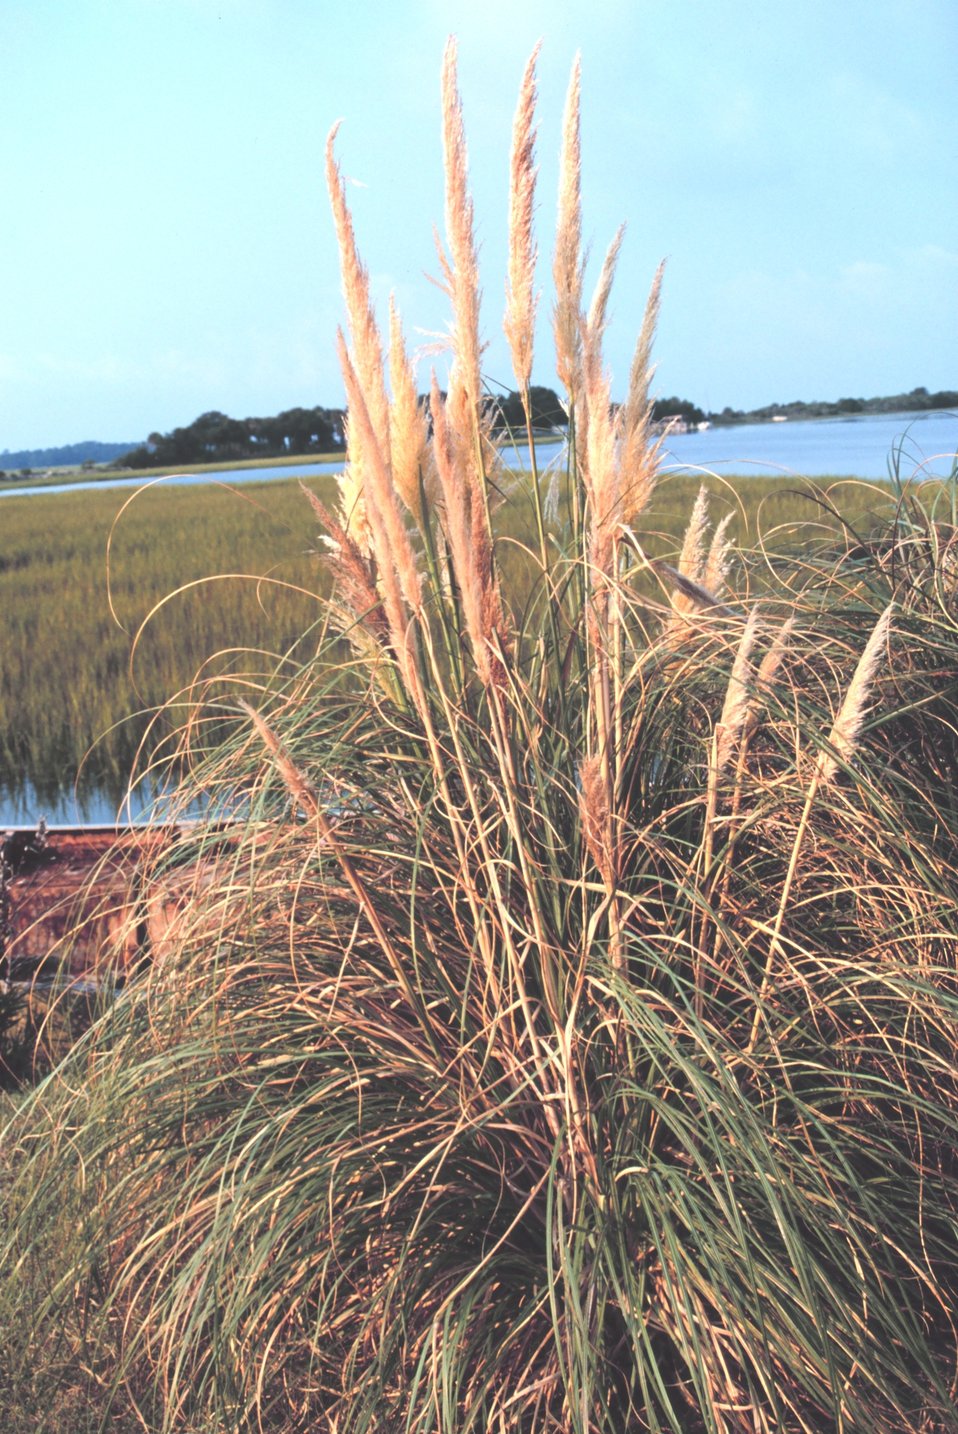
A large phragmites plant in the wetlands of Folly Island